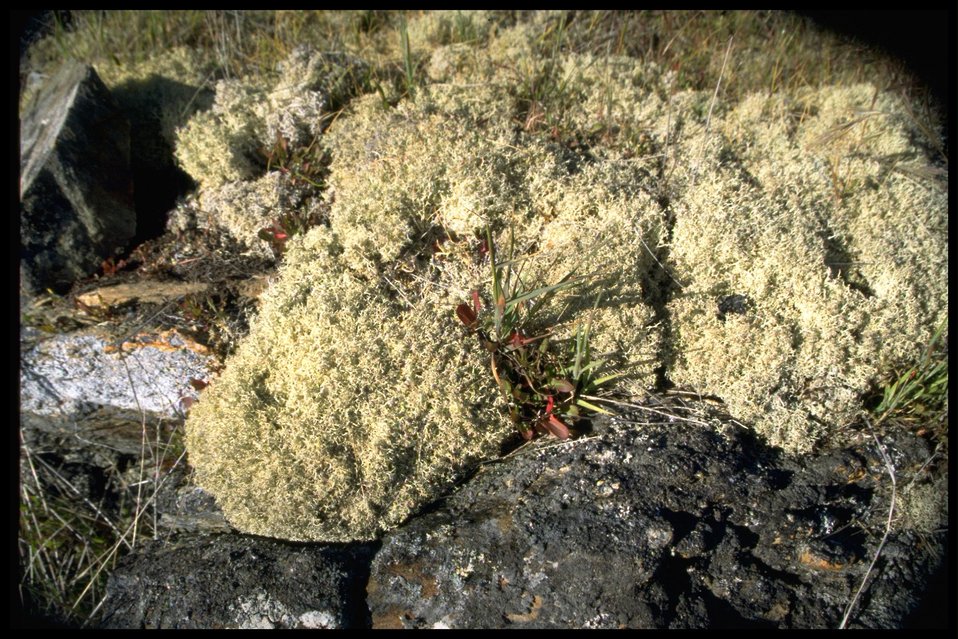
Lichen on rocks at Point Colville.